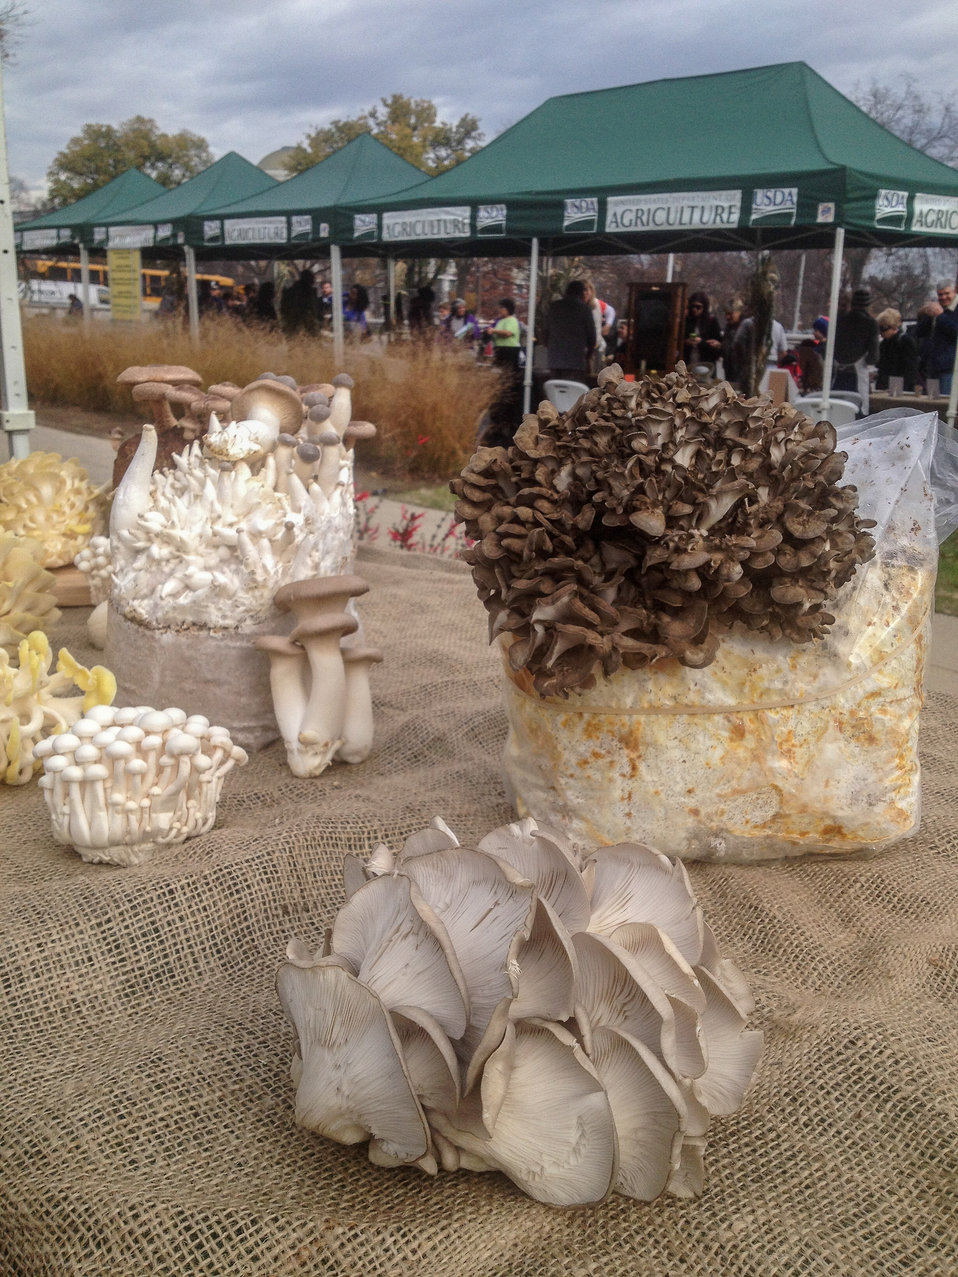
Yellow oyster (yellow and white), beach (small cap), royal trumpet (large stem), maitake (dark brown on plastic wrapped growing log, and oyster (light gray) mushrooms Yellow oyster (yellow and white), pom pom (egg shaped), beach (small cap), royal trumpet (large stem), maitake (dark brown on plastic wrapped growing log, and oyster (light gray) mushrooms on display at the U.S. Department of Agriculture (USDA) farmers markets and Harvest Festival at the USDA Whitten Building east parking lot in Washington, DC, on Friday, November 22, 2013.